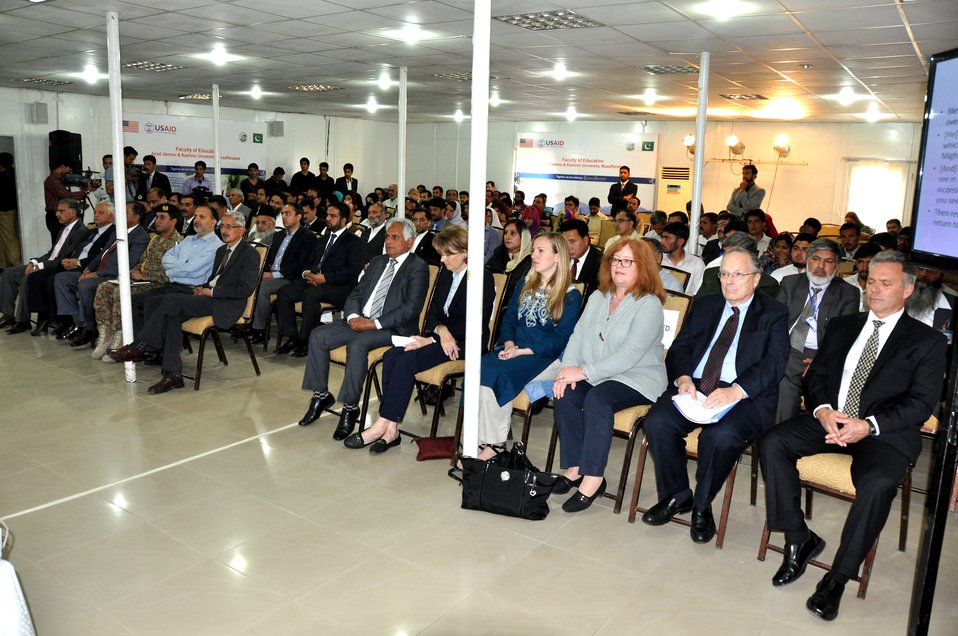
The United States Ambassador to Pakistan, Richard Olson broke ground for a U.S. funded construction of a new Faculty of Education building in Muzaffarabad, AJK. 07